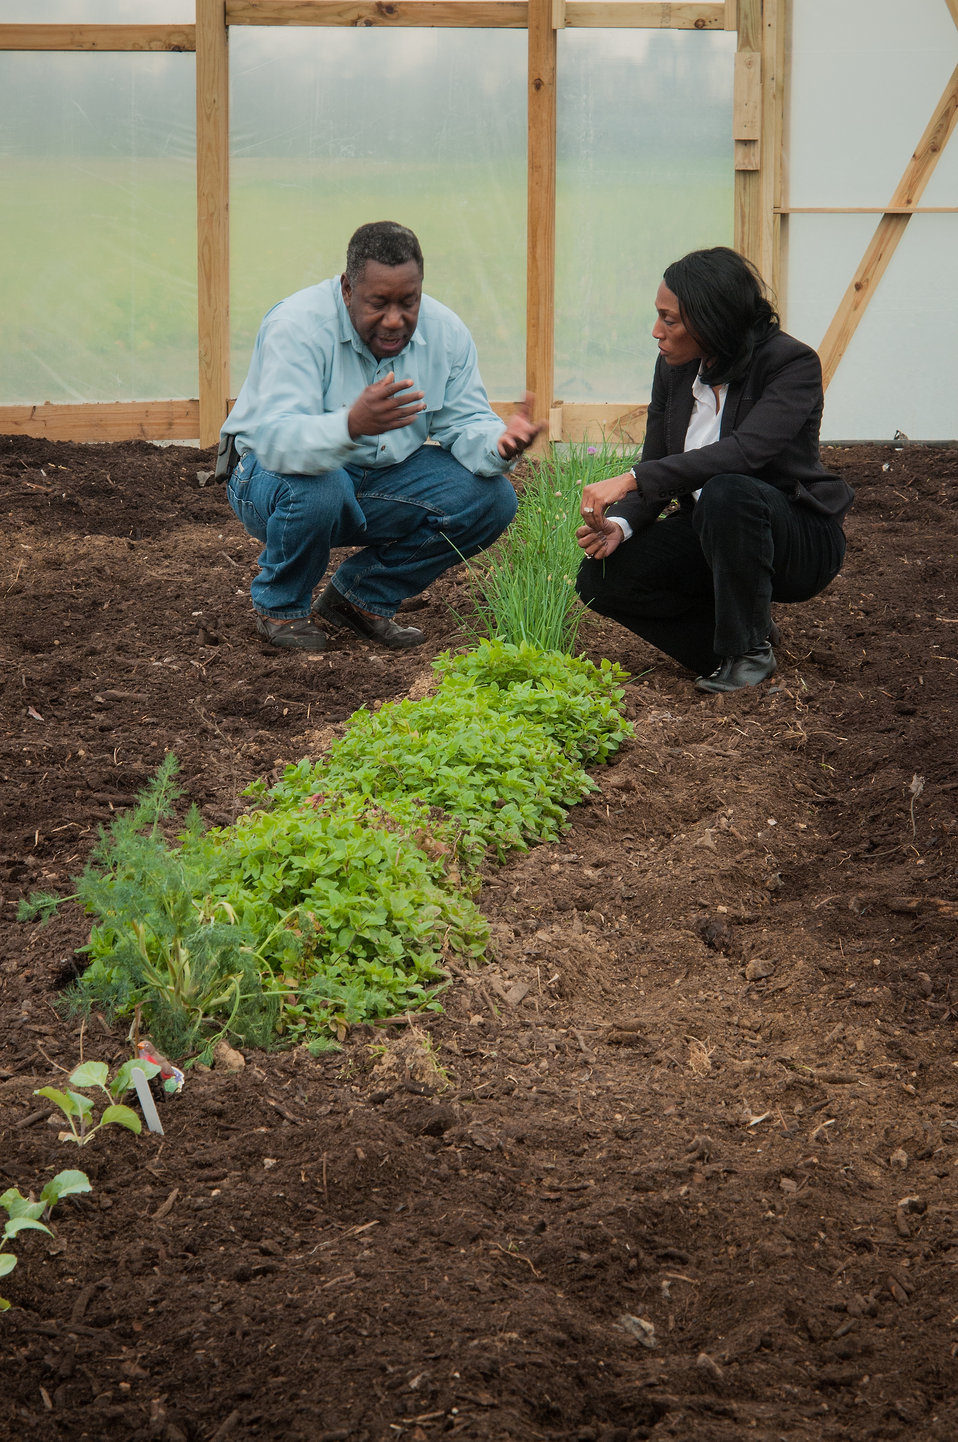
U.S. Department of Agriculture (USDA) Arkansas Strike Team Leader Charlie Williams and USDA Farm Service Agency (FSA) Arkansas State Executive Director Linda Newkirk discuss crops the East Arkansas Enterprise Community, (EAEC) Inc. in Forrest City, AR will demonstrate for food production on small plots growing in a high tunnel house on Mar. 4, 2013. The EAEC is one of 42 community-based organizations located in high poverty areas in the United States to benefit from the Arkansas Delta Seeds of Change (ADSOC) Initiative. USDA in partnership with Heifer International (an International organization whose mission is to work with communities to end hunger and poverty and care for the Earth) and various for-profit and non-profit organizations have organized the Seeds of Change Implementation Plan to use sustainable agriculture to build food systems in the Arkansas Delta.